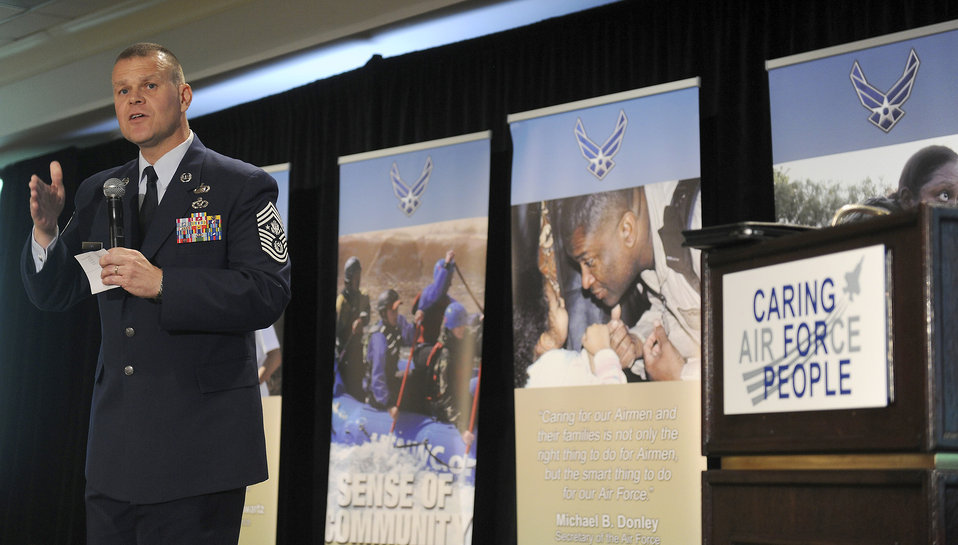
Air Force Caring for People forum begins

Chief Master Sgt. of the Air Force James A. Roy speaks to attendees at the Caring for People forum July 19, 2011, in Arlington, Va. More than 250 Air Force members and support professionals gathered for the three-day forum.